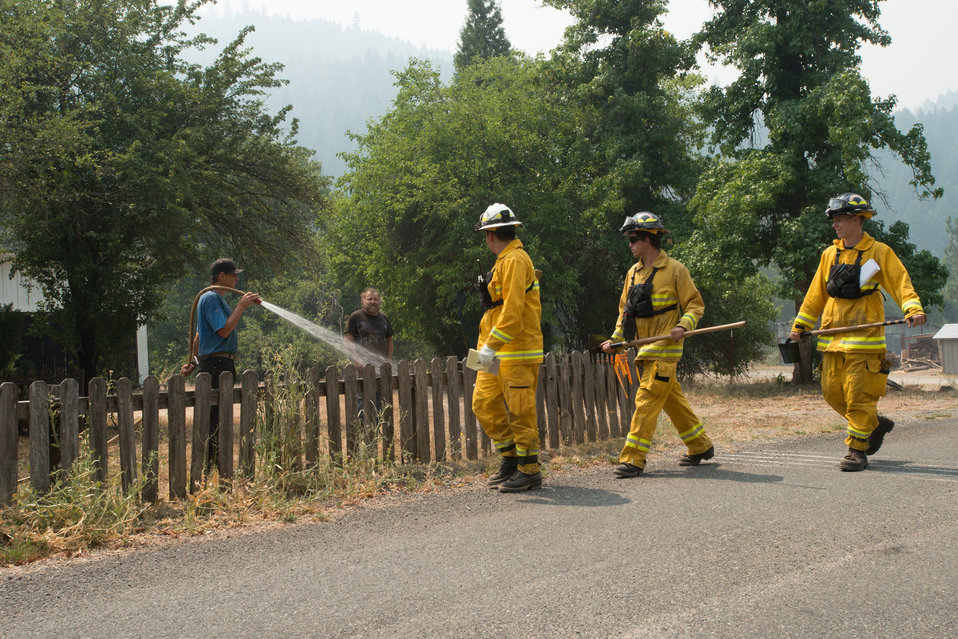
Fire fighters specializing both structural and wildland firefighting from Tahoe National Forest, Mt. Shasta-Trinity National Forest, South Yreka Fire Department, Dunsmuir-Castella Fire Department and others, have been called to the Salmon River Complex Fire, and conduct their structure-by-structure assessment of the urban intermix environment, at Sawyers Bar, CA in the Klamath National Forest, Tuesday, Aug. 6, 2013. The firefighters advise resident about fire prevention measures they are doing on their own as well as other measures they could take to prepare for fire. Actions such as moving away firewood, cutting and clearing plants next to their structures, and using garden hoses to soak structures and grounds all help in the event the main fire comes into their town.
There are two types structure environments in the realm of wildland firefighting.
This urban intermix structural protection environment is generally the more challenging, where structures have been built within a wildland area, isolated to some degree from other structures, but with no separation from wildland fuels (trees, brush and grass). This requires each structure to be assessed on a case-by-case basis. Fire protection measures will be tailored to each situation; defending these structures require a more complex solution, more firefighters, equipment and resources per structure.